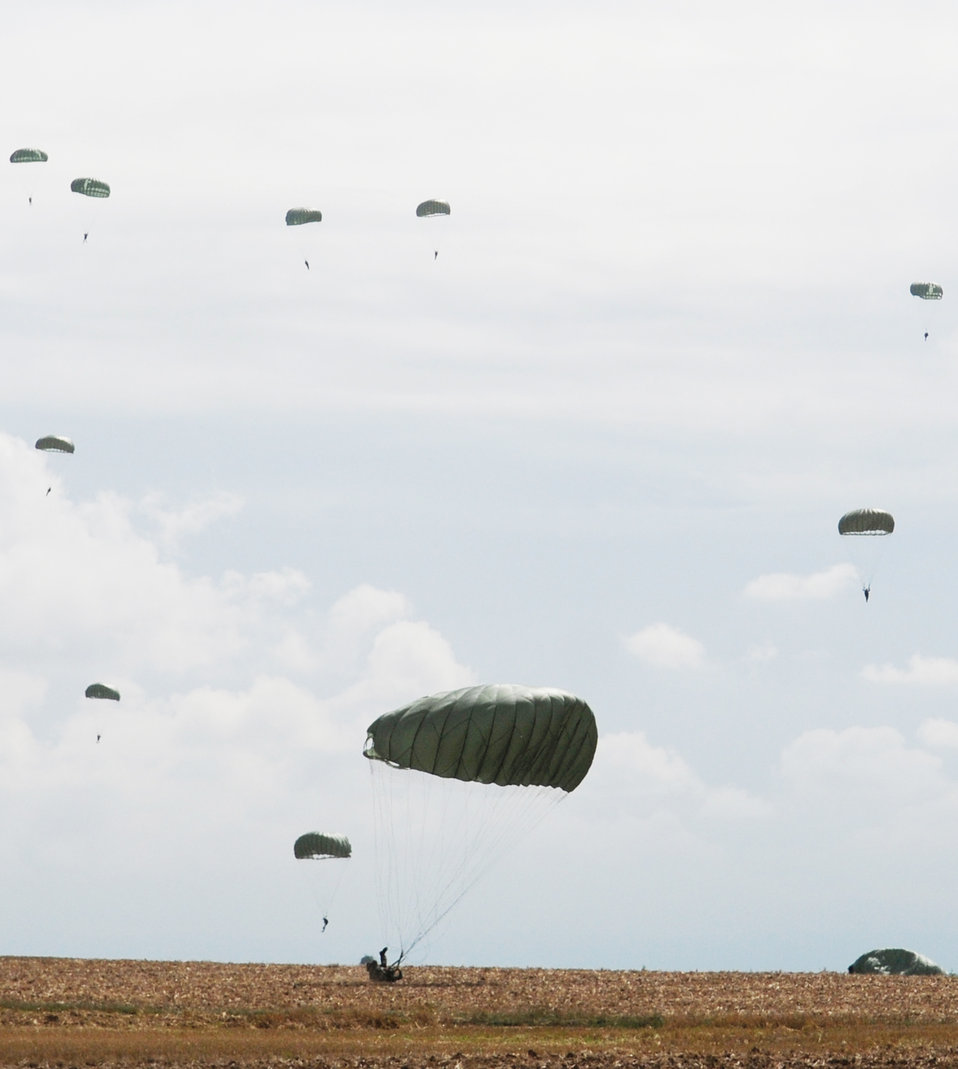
5 NATO countries take part in jump week

U.S. forces along with German, Italian, Belgium and Dutch armies land on the ground after parachuting over the Bunker drop zone Aug. 13 in southwestern Germany. U.S. Soldiers and Airmen performed a combined airborne drop with four other NATO countries during International Jump Week.